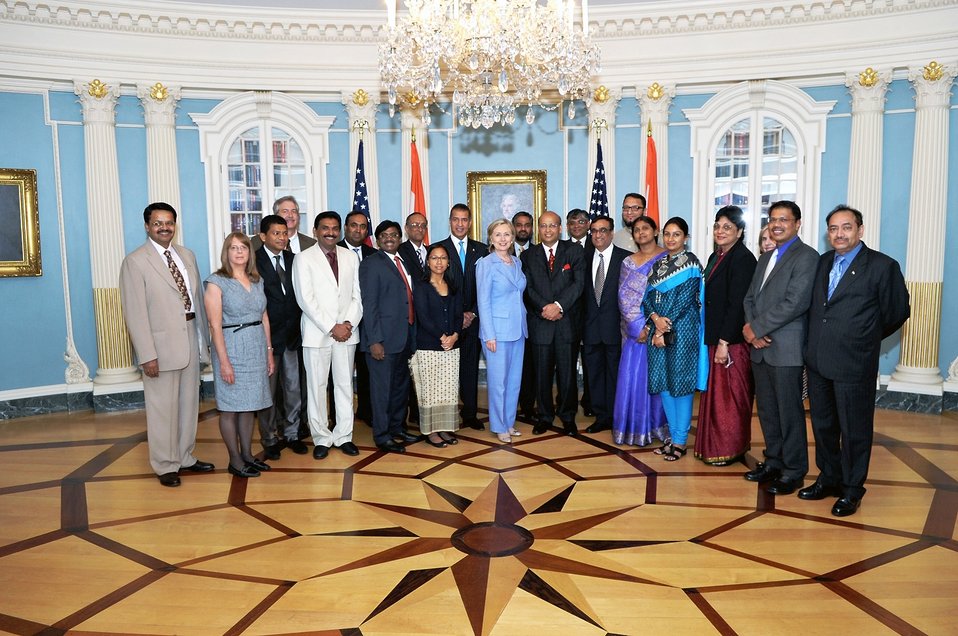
Secretary Clinton With Indian Parliamentarians

U.S. Secretary of State Hillary Rodham Clinton, center, poses for a photo with a visiting delegation of Indian parliamentarians at the U.S. Department of State in Washington, D.C., on June 17, 2010.